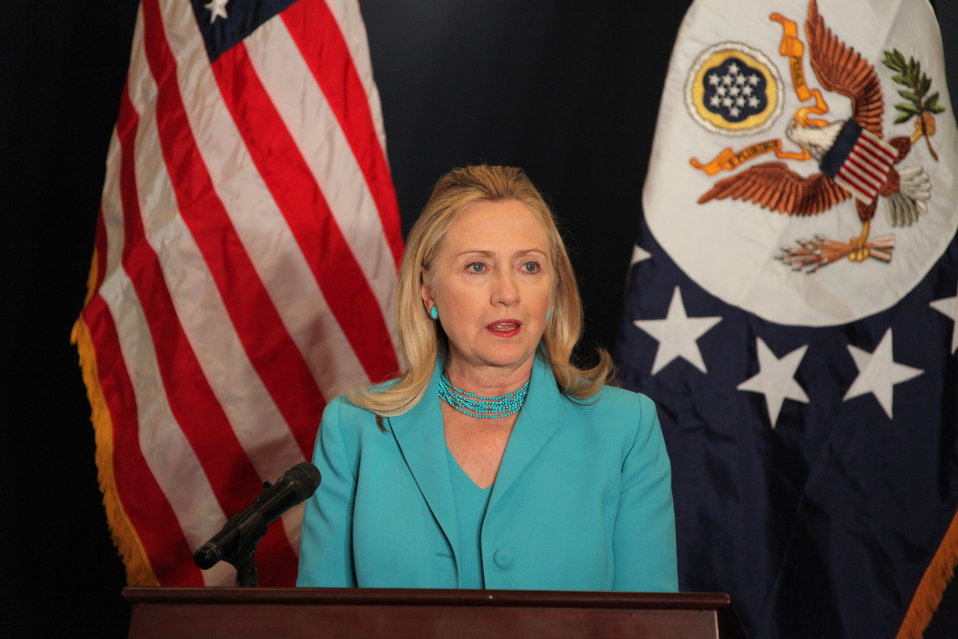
Secretary Clinton Addresses Burmese Press

U.S. Secretary of State Hillary Rodham Clinton addresses Burmese and international press in Nay Pyi Taw, Burma, on December 1, 2011.